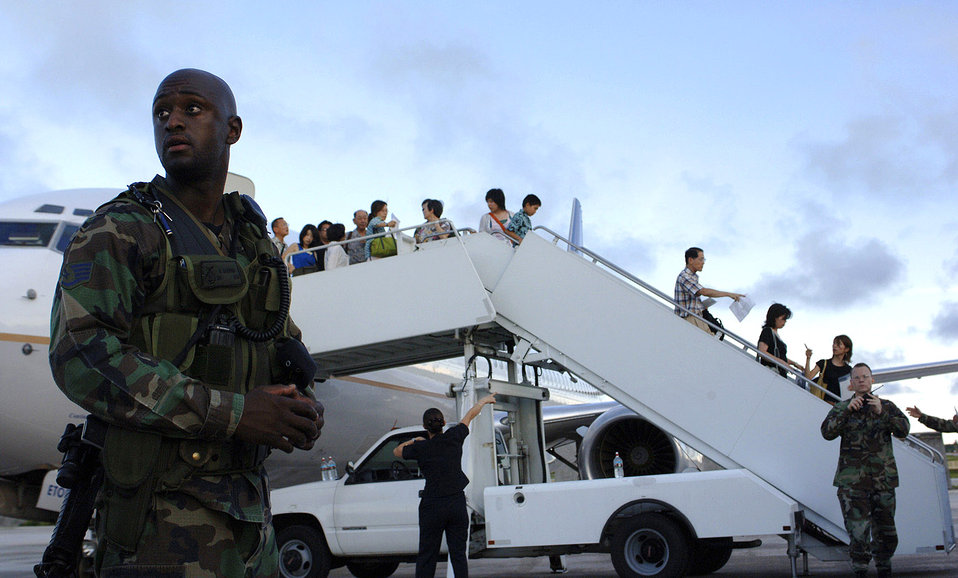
Anderson answers call for help

ANDERSEN AIR FORCE BASE, Guam -- Staff Sgt. Wayne Gatewood watches as passengers leave a diverted aircraft here Aug. 19. More than 800 passengers arrived safely and cleared through customs after their commercial flights were diverted here because of an emergency that temporarily closed Won Pat International Airport, Guam. Airmen and local custom agents and authorities worked together to process passengers on eight airliners. Sergeant Gatewood is assigned to the 36th Security Forces Squadron.